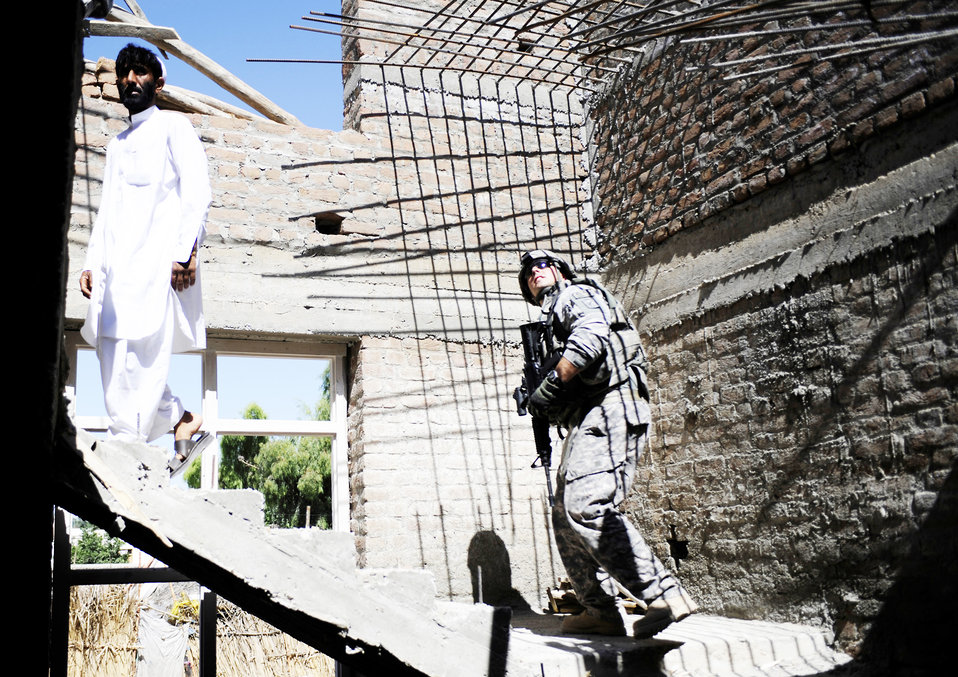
Afghanistan's future foundation

Tech. Sgt. Bryan Calaman, Nangarhar Provincial Reconstruction Team engineer, conducts a quality assurance inspection of a development site May 30, in Nangarhar Province, Afghanistan. The PRT is responsible for development and reconstruction projects in Nangarhar Province. The projects are built by local and contractors and are designed to improve the livelihood of the people living in the area.